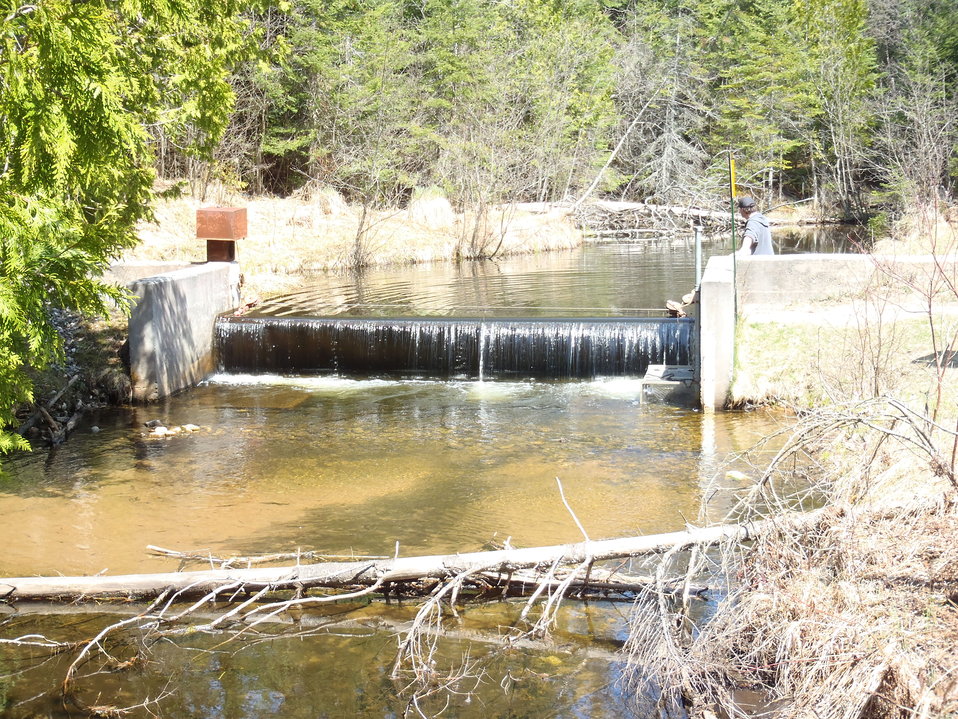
Albany Creek Sea Lamprey Barrier in New York.